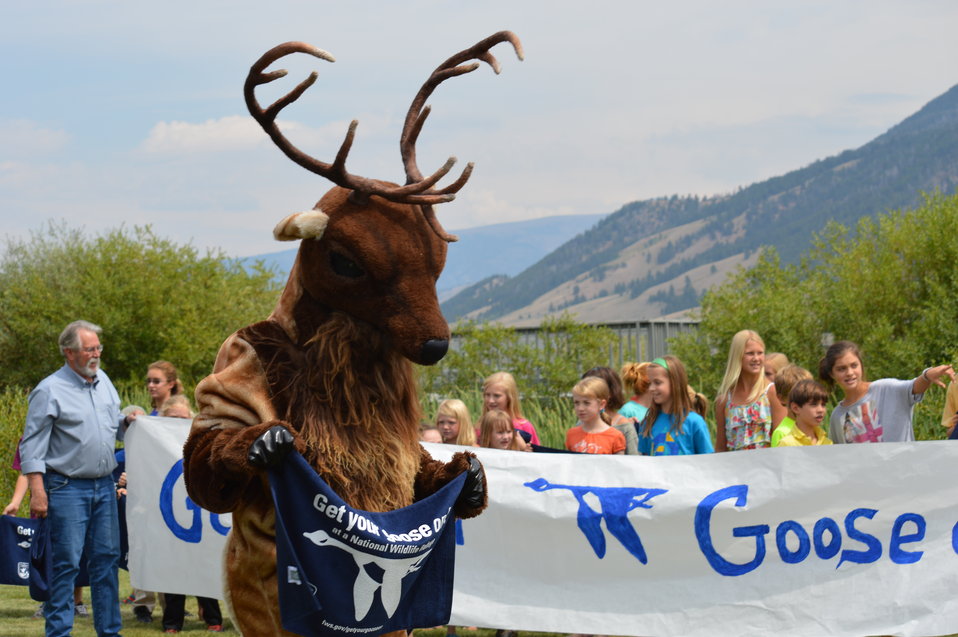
Get Your Goose On! - National Elk Refuge Style

On August 10, 2012 the U.S. Fish and Wildlife Service and Partners celebrated the 100 year anniversary of the establishment of the National Elk Refuge. In these photos, young attendees, along with Puddles the Blue Goose and the National Elk Refuge's mascot, showed us how to Get Your Goose On! with style.